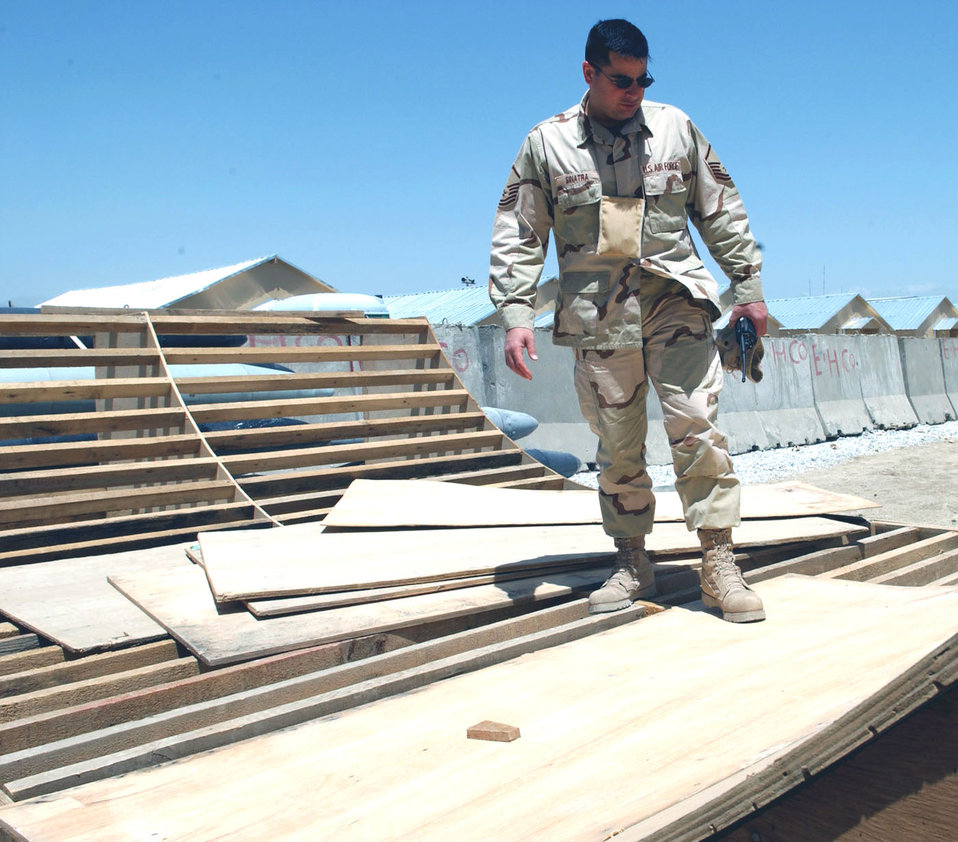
Keeping safety a priority

BAGRAM AIR BASE, Afghanistan -- Master Sgt. Steve Sinatra looks over a skateboard ramp Airmen here are building. Airmen in the safety office keep an eye out for on-duty and off-duty safety hazards around the base. Sergeant Sinatra is the 455th Air Expeditionary Wing ground safety manager.